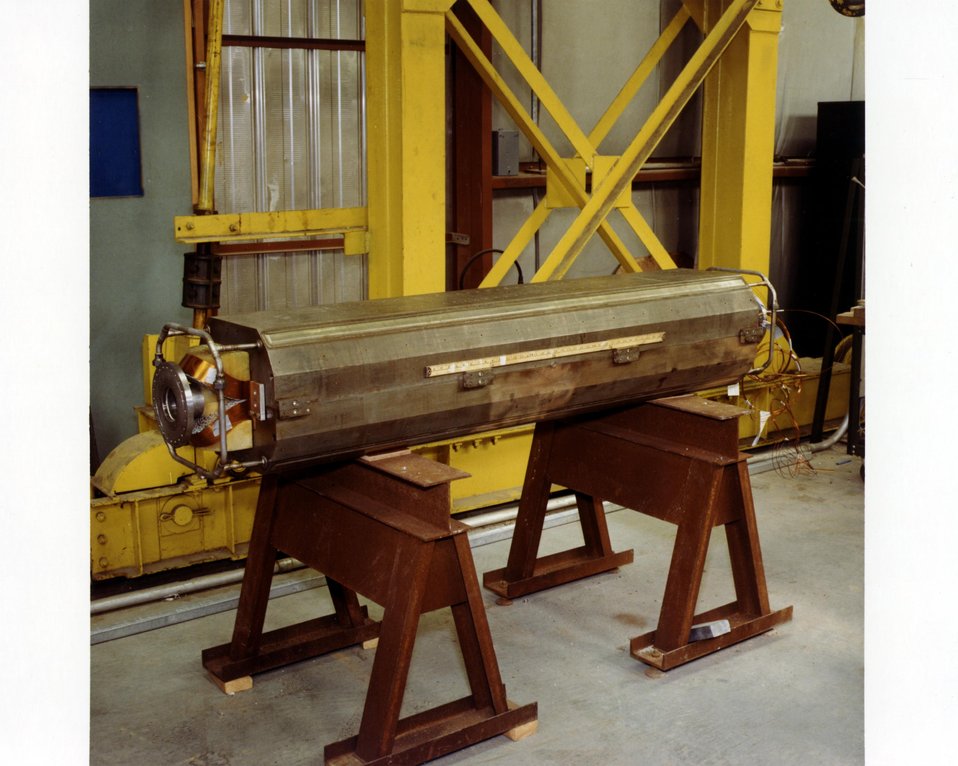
THE SPARK CHAMBER MAGNET FOR THE AGS.

THE AGS ACCELERATES PROTONS (THE NUCLEI OF HYDROGEN ATOMS) TO AN ENERGY OF 30 BILLION ELECTRON VOLTS (GEV) TO PROVIDE PROJECTILES FOR SMASHING THE NUCLEUS OF OTHER ATOMS. THE ENORMOUS ENERGY RELEASED IN THIS COLLISION SCATTERS THE PRI-MARY PROTONS AND THE CONSTITUENTS OF THE TARGET NUCLEUS AND ALSO RESULTS IN THE PRODUCTION OF NEW UNSTABLE SHORT LIVED PARTICLES NOT FOUND IN ORDINARY MATTER. THE STUDY OF THE SCATTERING AND PRODUCTION PROCESSES PROVIDES INFORMATION ABOUT THE CONSTITUENTS OF THE PROTON.